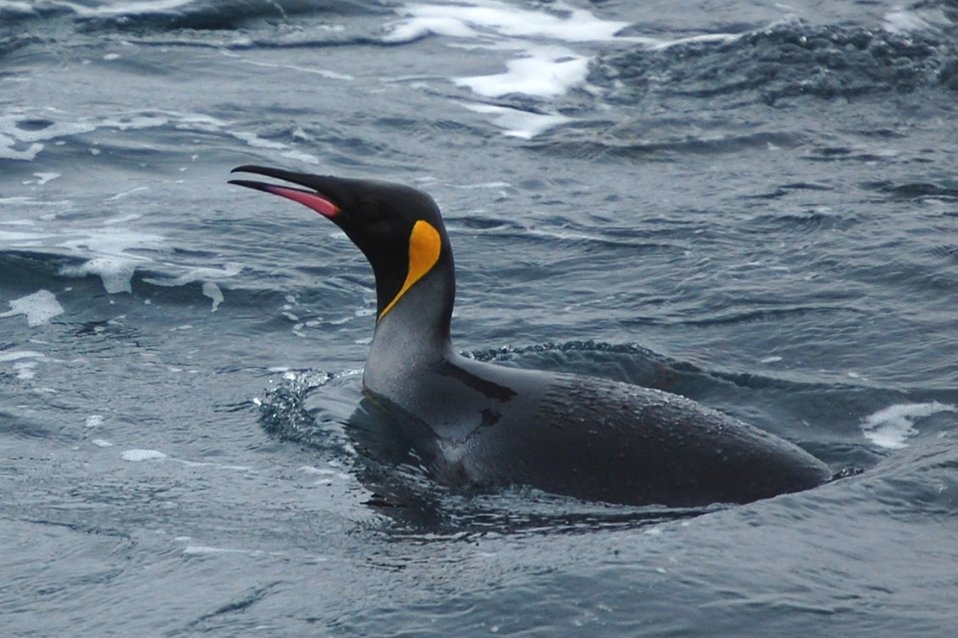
King penguin.